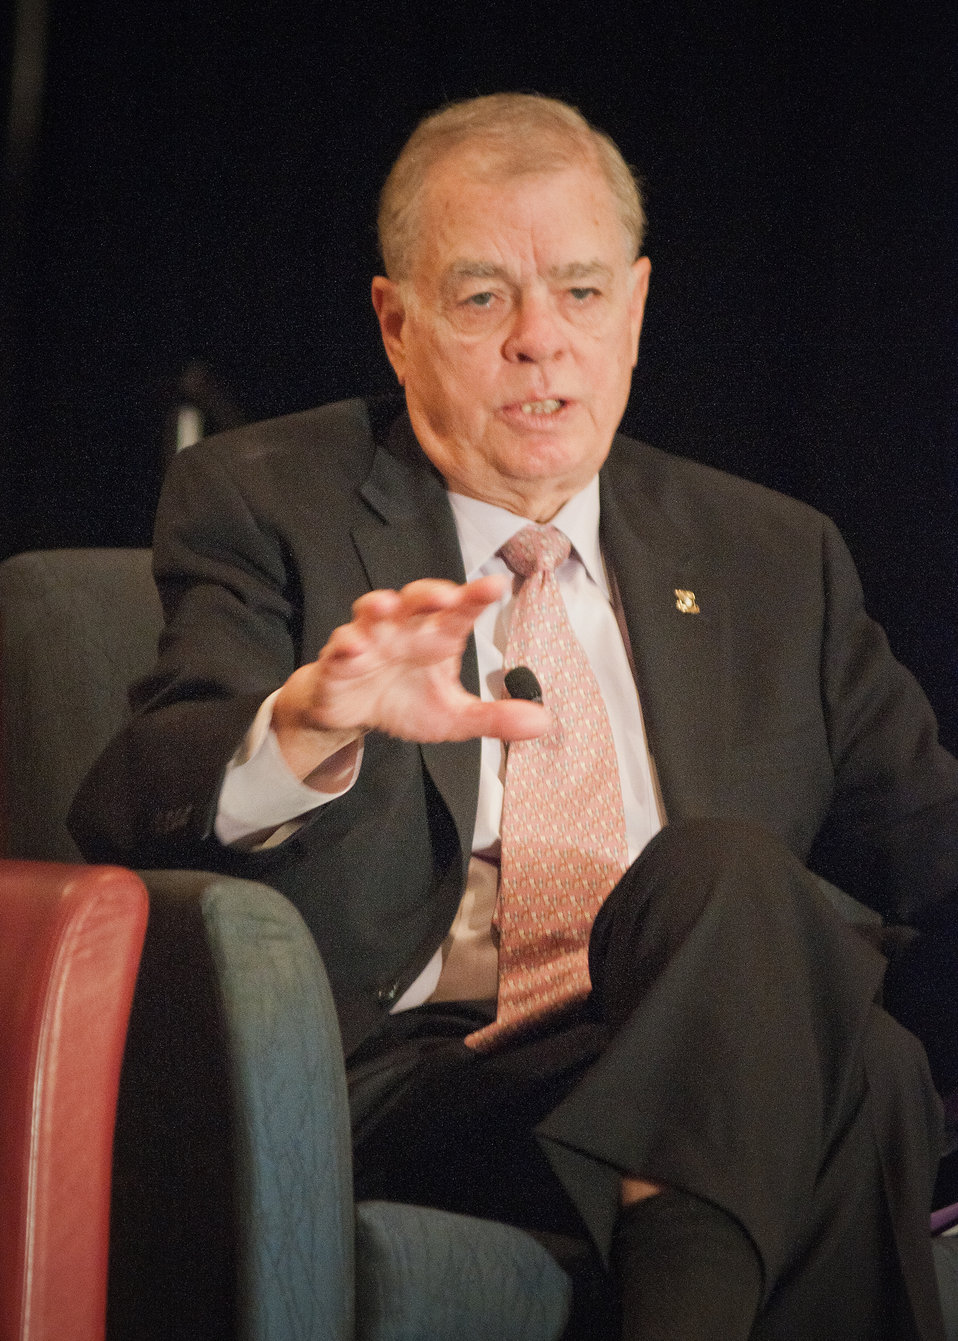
At the 2012 Agricultural Outlook Forum, “Moving Agriculture Forward” in Arlington, VA, held on Thursday, February 23, 2012, 7 former Secretaries of Agriculture sat on the plenary panel “Visions of the Future” hosted by current Agriculture Secretary Tom Vilsack. John Block speaks out during the panel discussions.